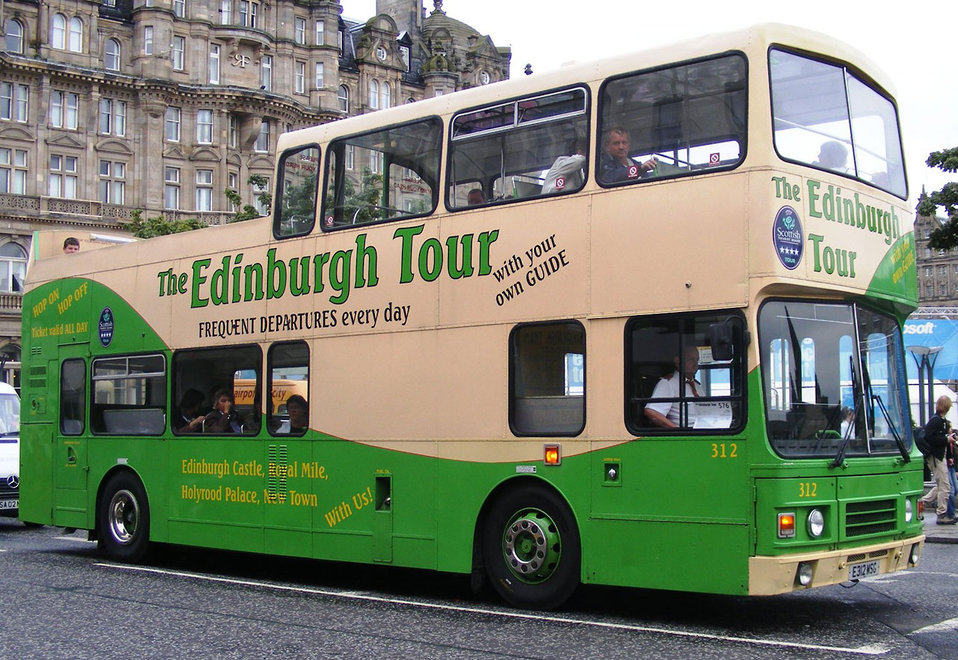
City tour bus

An edinburgh city tour bus.